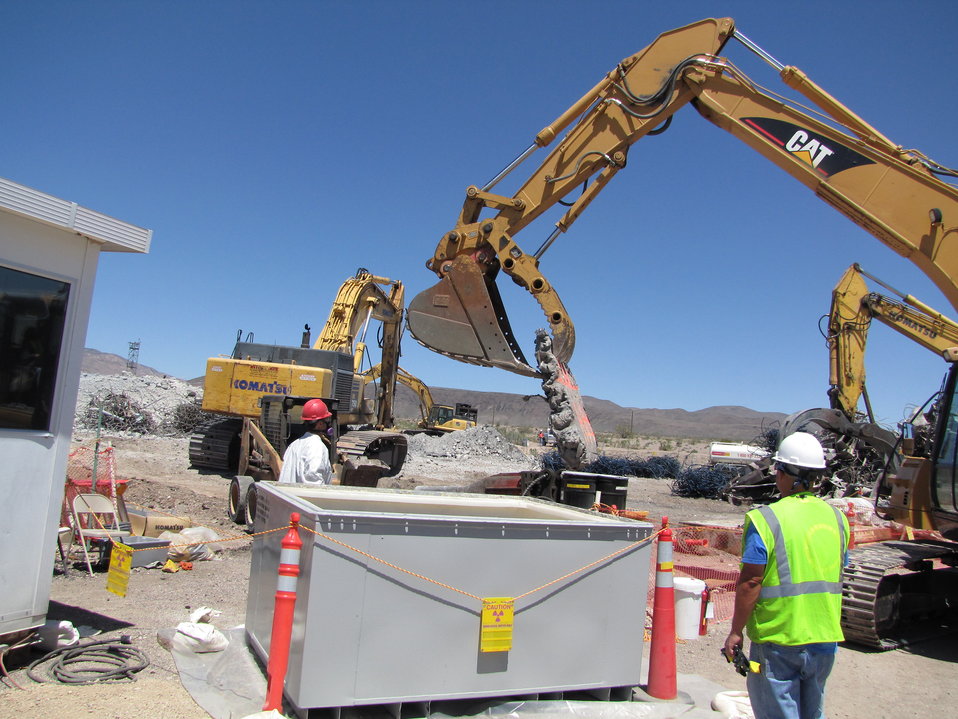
Recovery Act Expedites Cleanup at Nevada Test Site and Puts Nevadans to Work

The Office of Environmental Management at the Nevada Site Office (NSO) was granted more than $50 million in 2009 and 2010 to accelerate cleanup at sites at the Nevada Test Site and expand waste management operations. The Nevada Test Site was the location of nearly 1,000 atmospheric and underground nuclear tests which resulted in more than 3,000 contaminated soil and groundwater sites, and industrial facilities. ARRA funding has expedited planned projects at these sites to help to reduce the footprint and shrink the total area identified for cleanup.